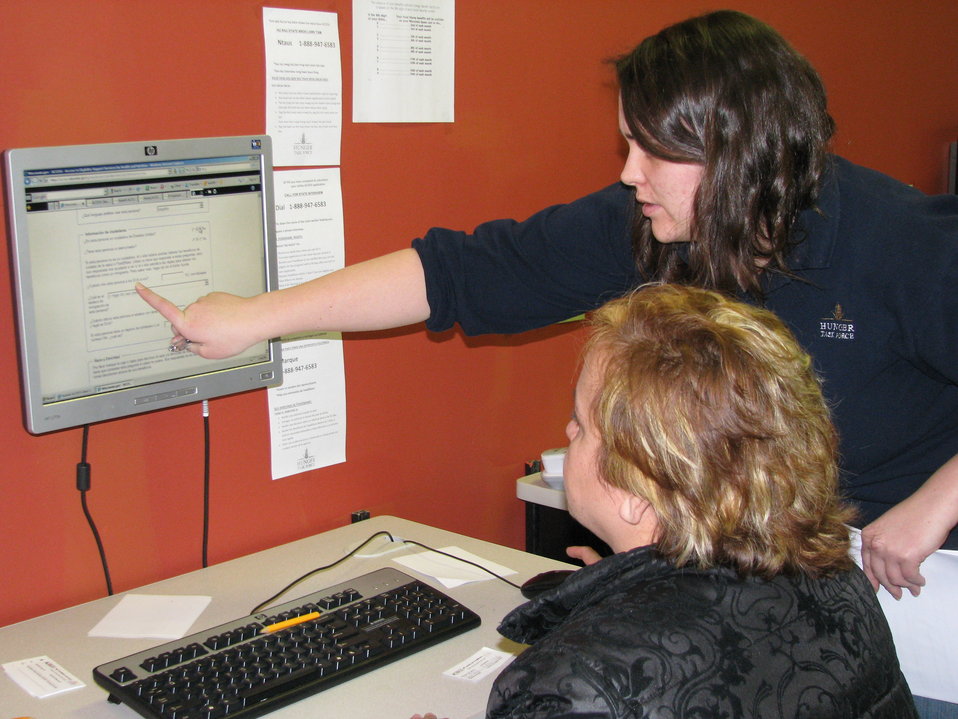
Robles Service Center HTF Elizabeth Leister

Hunger Task Force Food Share Assistant Elizabeth Leister at the Robles Center in Milwaukee, WI helps a client access food benefits from the U.S. Department of Agriculture’s (USDA) Food Nutrition Service (FNS) Supplemental Nutrition Assistance Program (SNAP). The Center was established in the 1970’s and was the first social services office serving Milwaukee’s predominantly Latino south side.